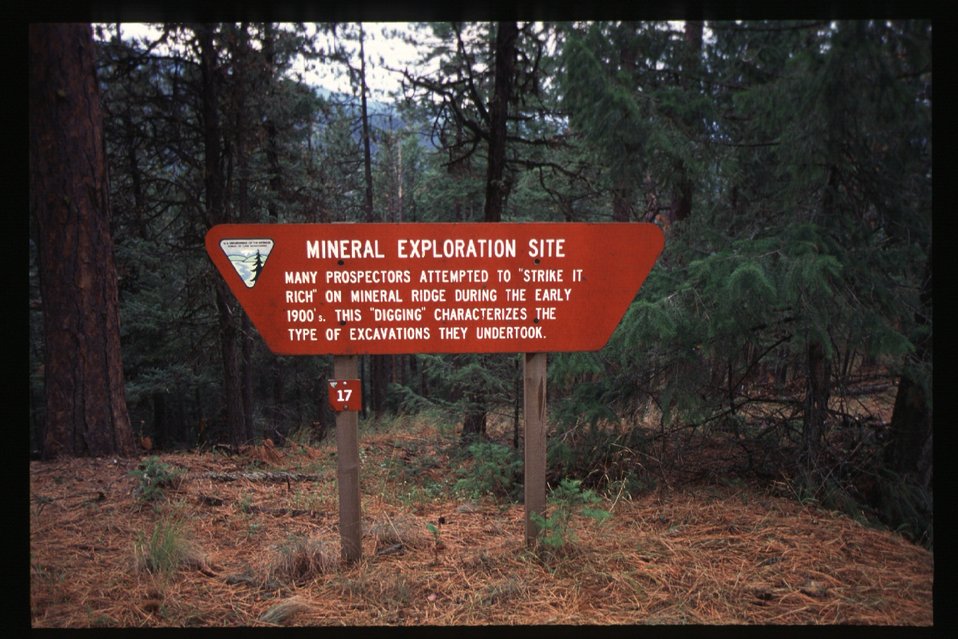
Mineral Ridge Trail Mineral Exploration Site Couer d'Alene UCSC Upper Columbia Salmon Clearwater District